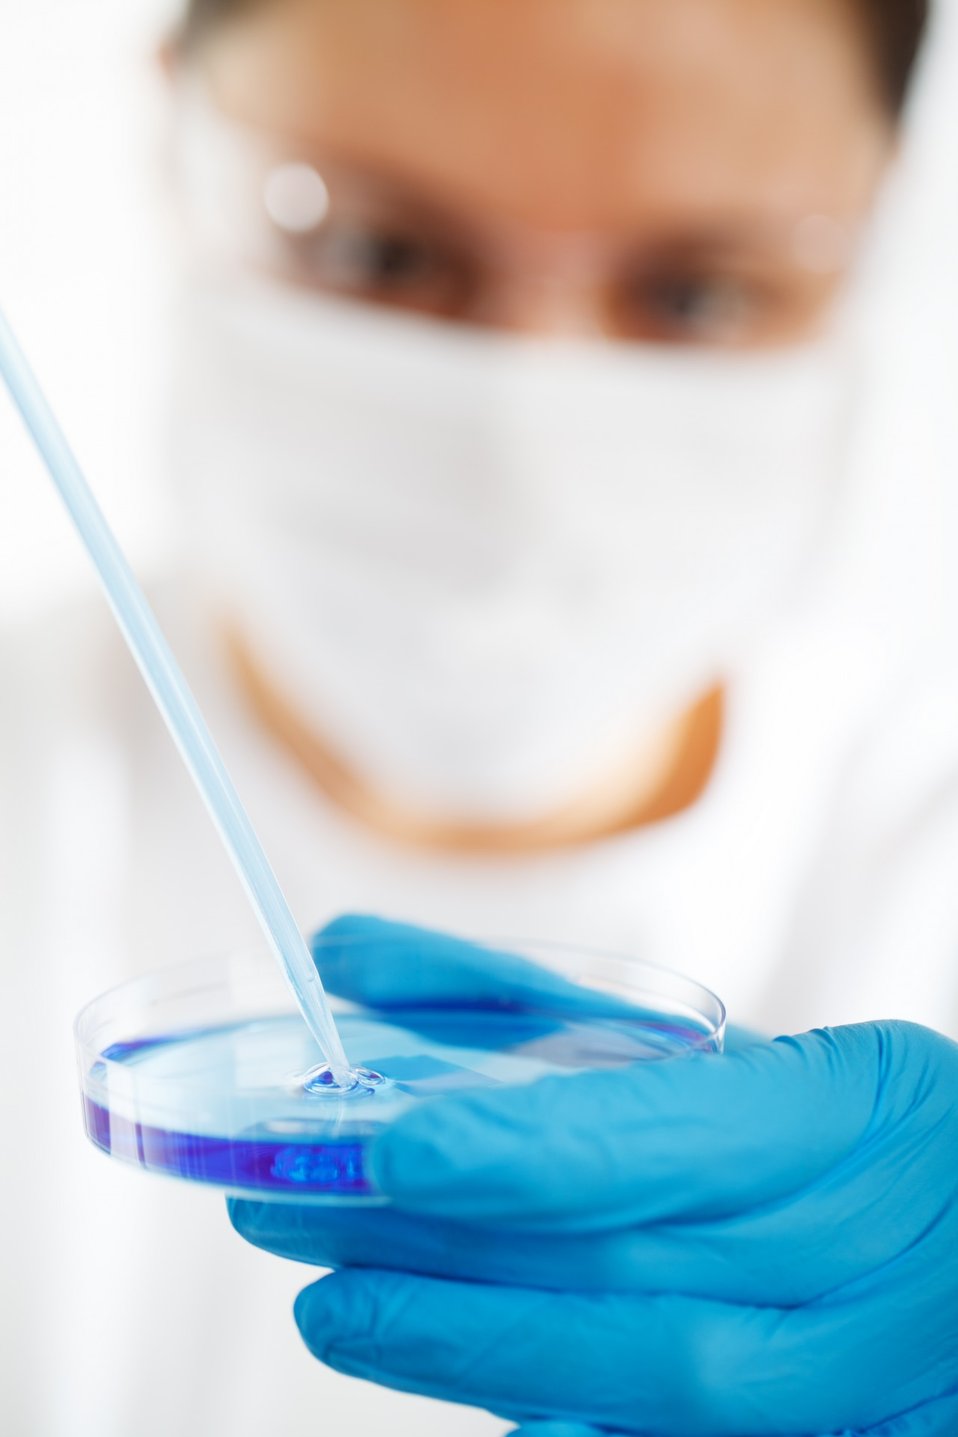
Researcher using petri dish

A researcher using a petri dish with blue liquid.